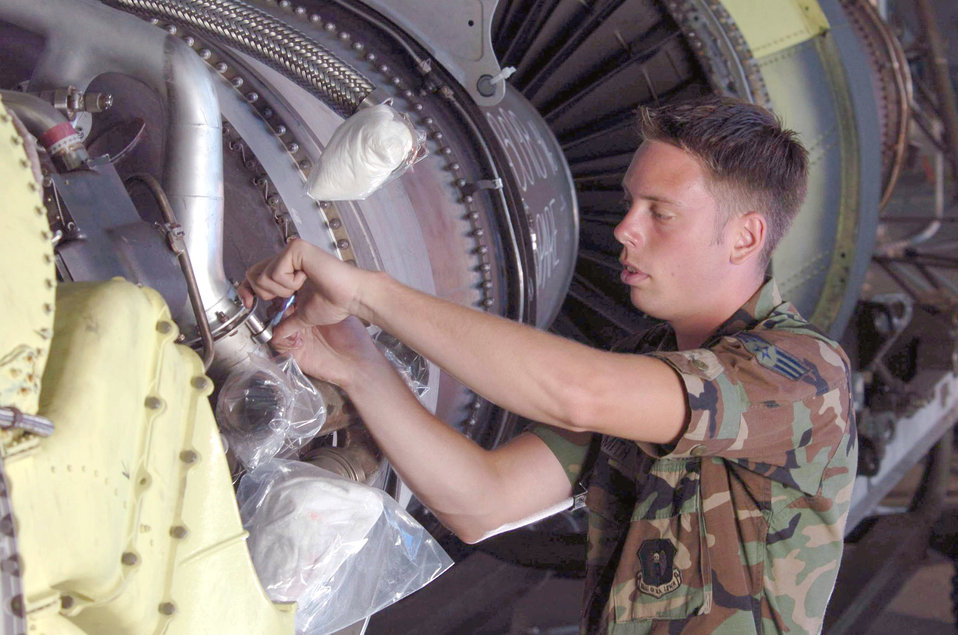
Safe engine

ANDERSEN AIR FORCE BASE, Guam -- Senior Airman Lester Smith uses a safety wire to secure a quick disconnect line to prevent leaks on a B-52 Stratofortress aircraft engine during maintenance inspection here March 25. Senior Airman Smith is an engine mechanic deployed here from the 5th Bomb Wing at Minot Air Force Base, N.D.